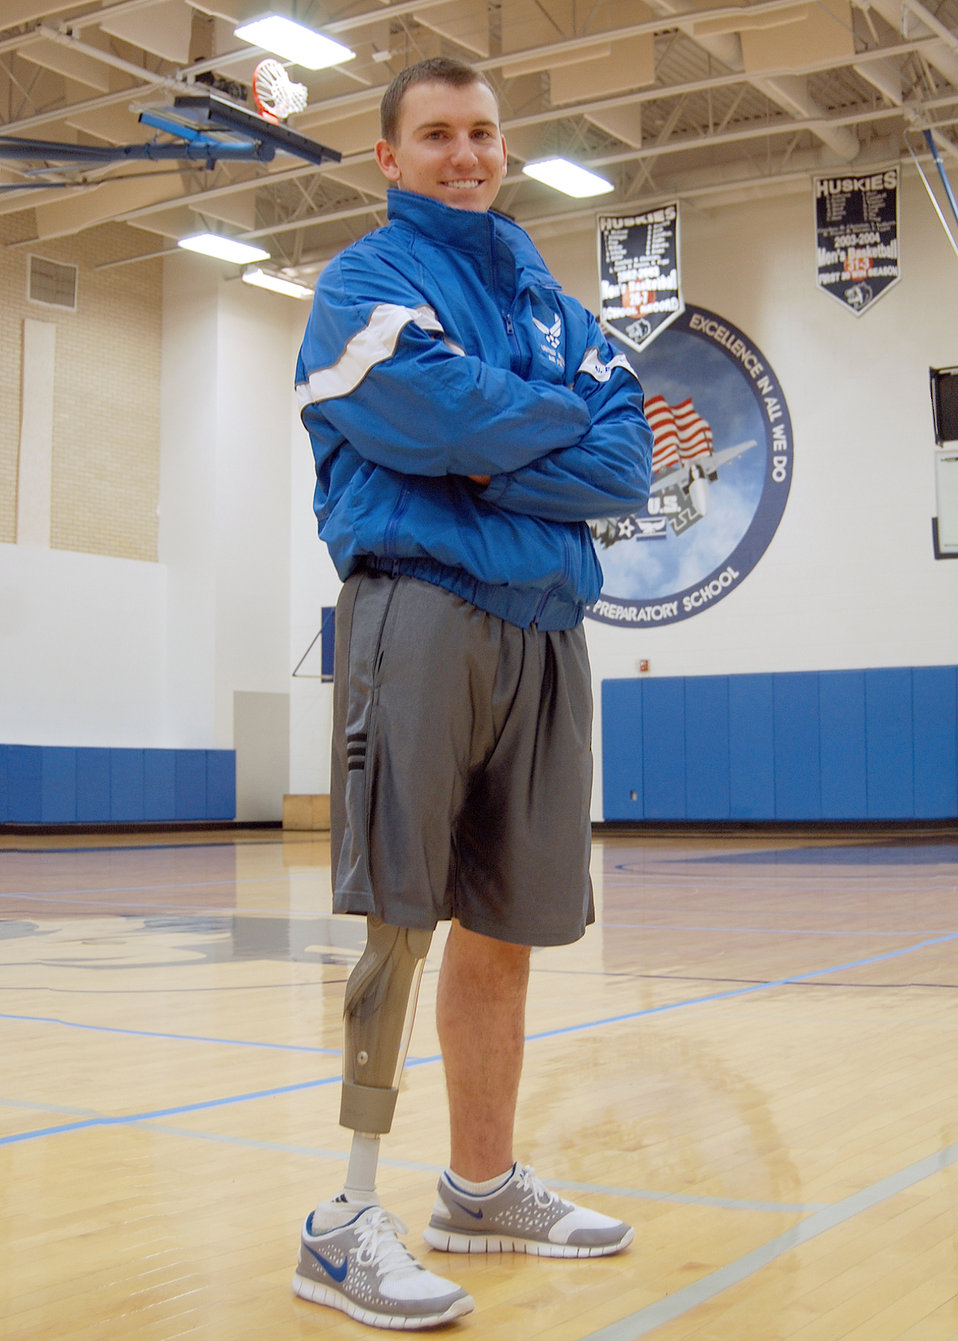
2011 Warrior Games

Matthew Pirrello, a sophomore and Air Force ROTC cadet at Ohio University, takes a break after finishing wheelchair basketball practice May 5, 2011, at the U.S. Air Force Academy. Cadet Pirrello, a member of the Air Force team, will be competing in swimming, sitting volleyball and wheelchair basketball at the 2011 Warrior Games in Colorado Springs, Colo. His right leg was amputated above the knee as a result of a free-fall jump accident.